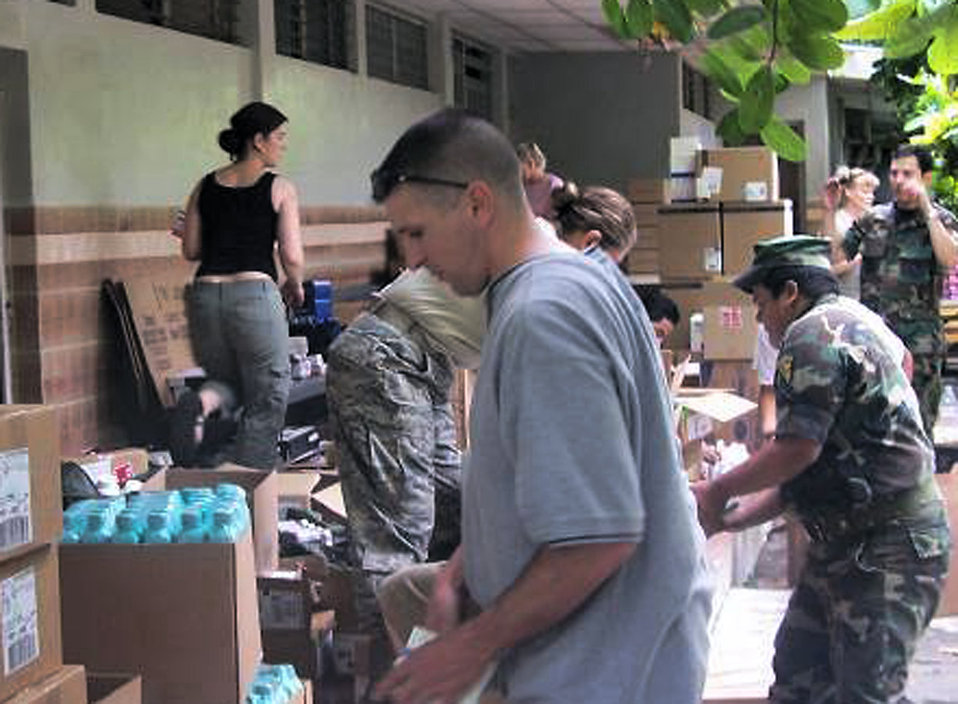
21st MDG Airmen return from humanitarian, training deployment

Capt. Doug Smith helps sort medications and supplies during a medical readiness exercise, or 'MEDRETE' June 20 in San Miguel, El Salvador. Airmen from the 21st Medical Group are supporting the Central American exercise as part of an ongoing U.S. Southern Command initiative. Captain Smith is a 21st Medical Group nurse practitioner.